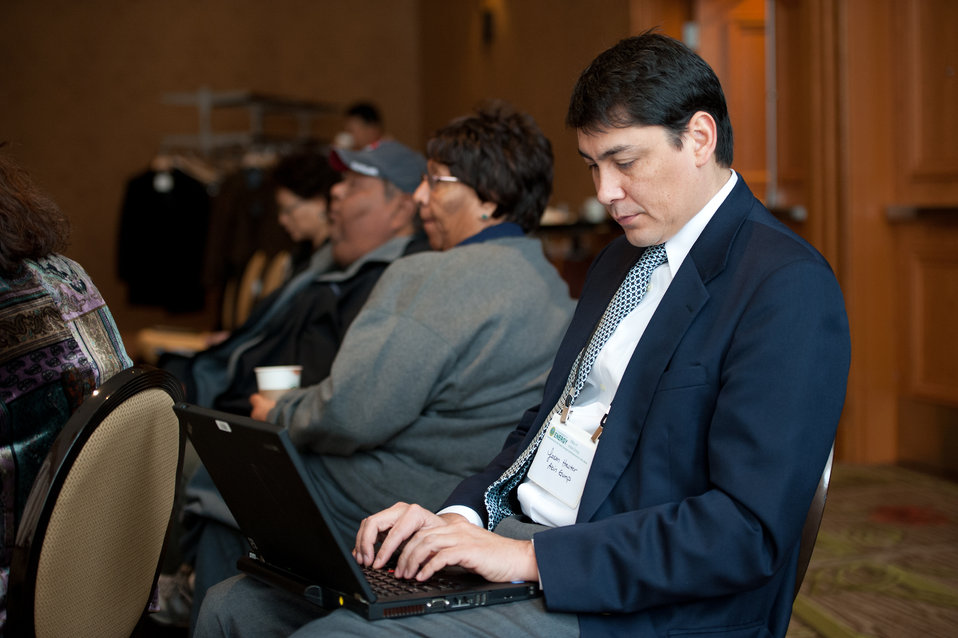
Indian Transmission Forum

February 7, 2012 - Attendees at the Office of Indian Energy Tribal Leader Energy Forum on transmission held February 2012 in Denver, Colorado.